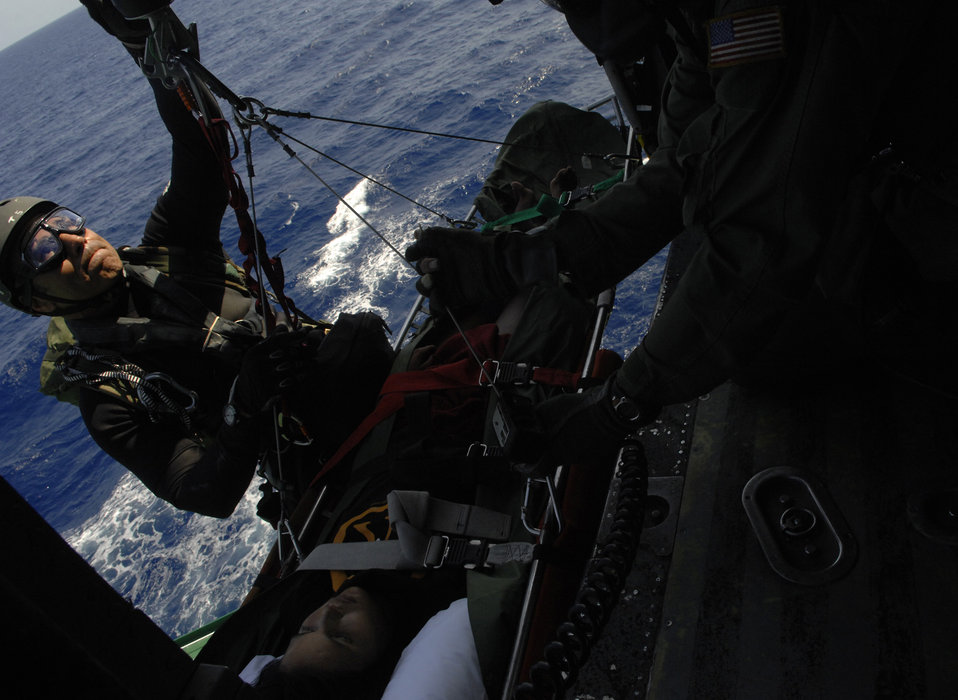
Moody Airmen rescue Cuban migrants found at sea

Tech. Sgt. Lem Torres hoists up a survivor on a litter during a search and rescue mission approximately 230 miles south of New Orleans April 25. Responding to a request for support from the U.S. Coast Guard, two HH-60G Pave Hawk helicopters of the 41st Rescue Squadron and a 71st Rescue Squadron HC-130P King performed a 10-hour mission to retrieve a boatload of stranded immigrants in distress that had been picked up by a passing ship. Sergeant Torres is a 38th RQS pararescueman.